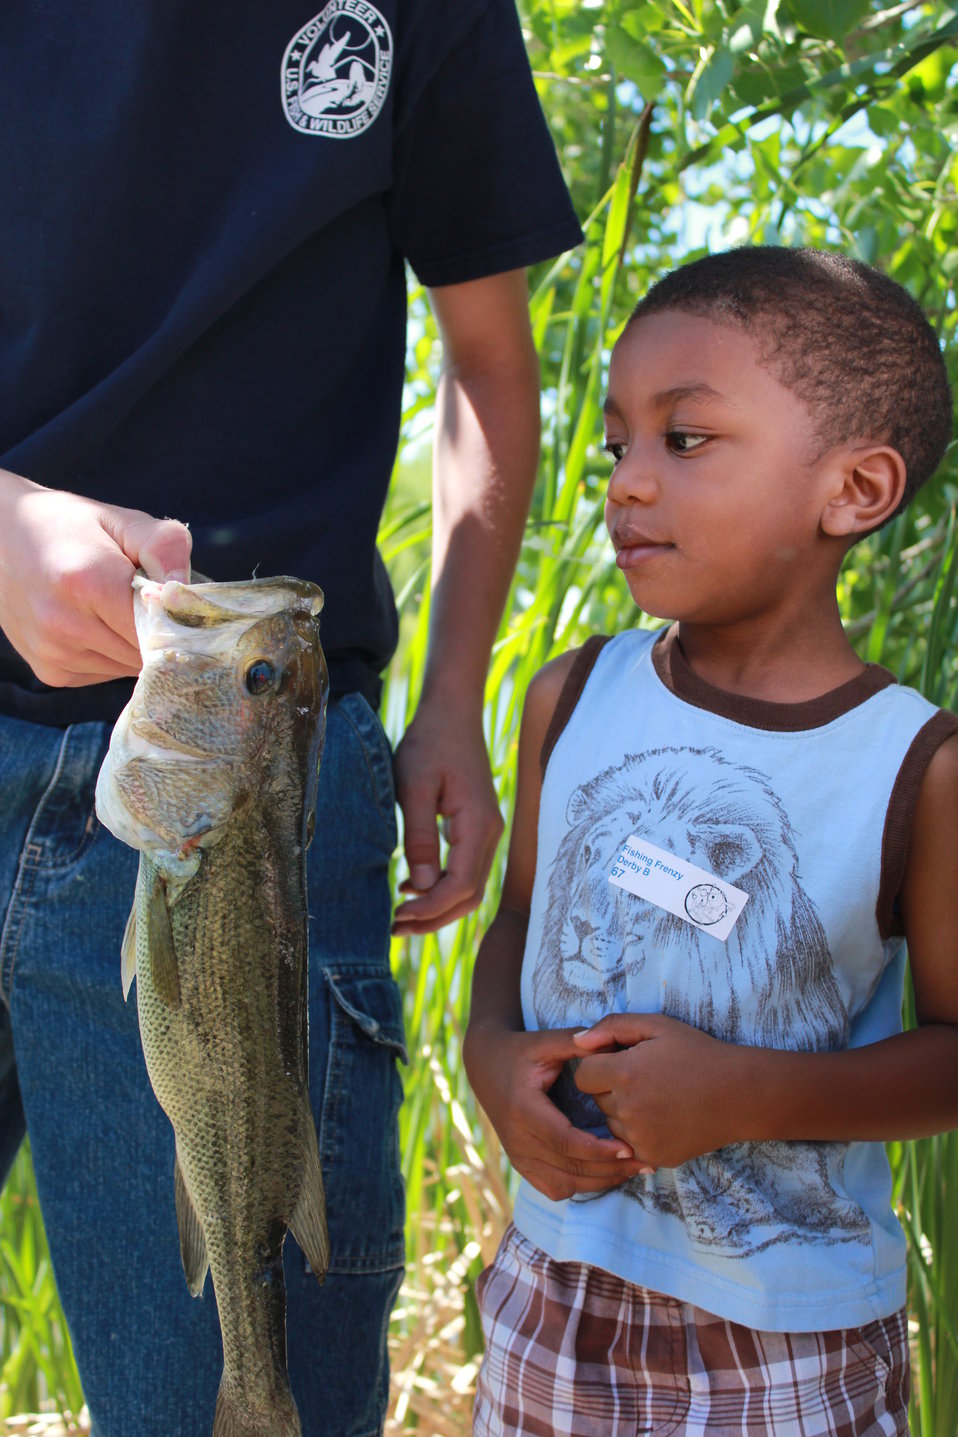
Quite the Catch

A Rocky Mountain Arsenal NWR volunteer assists a first-time angler with his catch.

Location: Lake Mary, Rocky Mountain Arsenal NWR

Credit: Jaclyn Kircher / USFWS

Photo Contest Entry #27